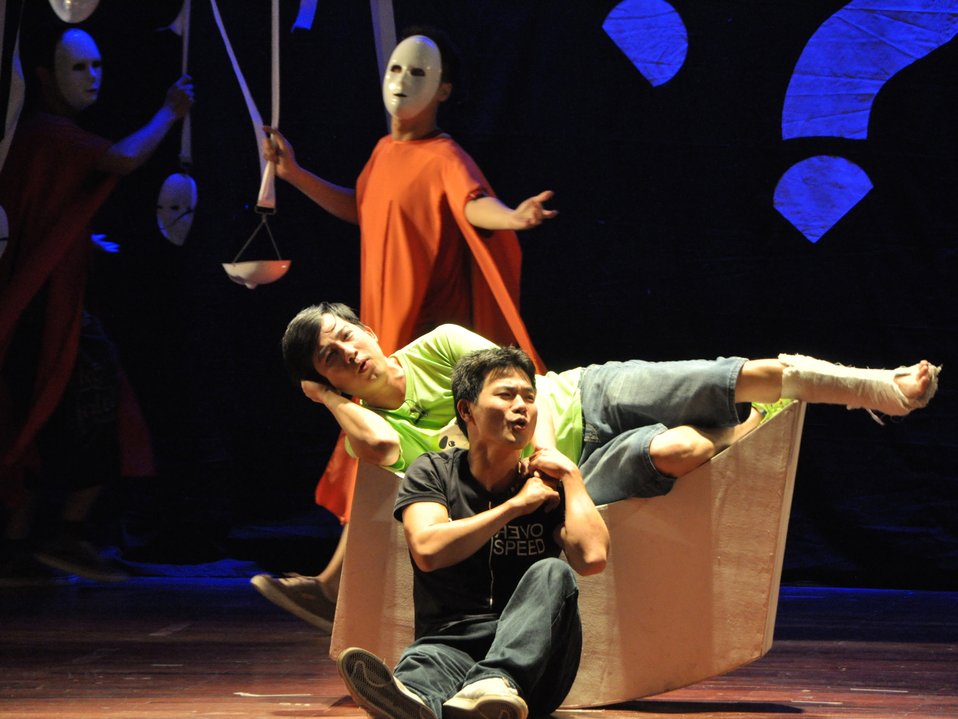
PEPFAR Musical Questions and Exclamations

Hanoi, May 17, 2013